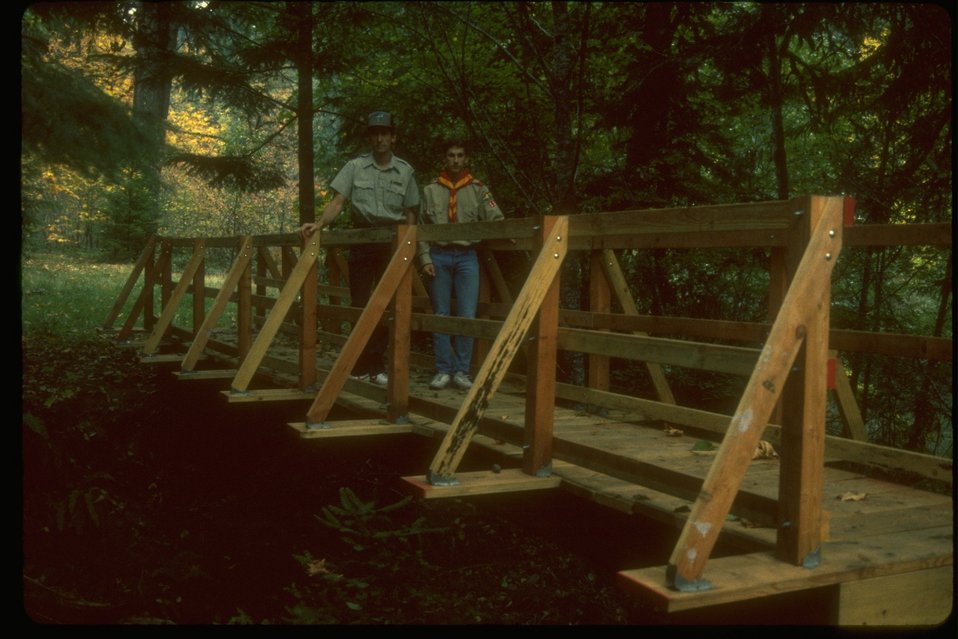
Eagle Scouts standing on their Eagle Scout Project.